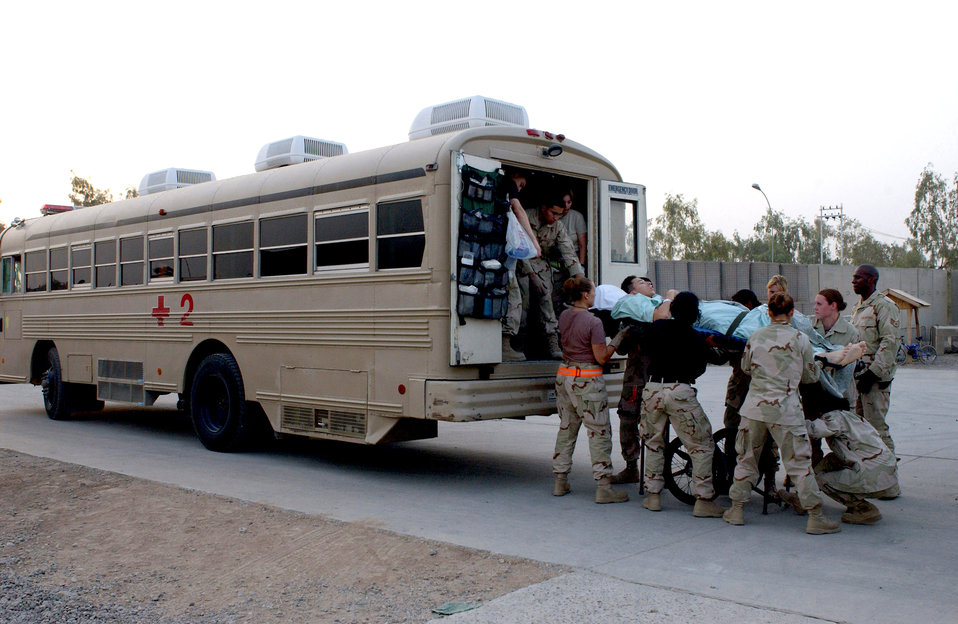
Balad's medics move into new facility

Volunteers and 332nd Expeditionary Medical Group Airmen load a Soldier into an ambulance bus at Balad Air Base, Iraq, Aug. 3. When wounded servicemembers and Iraqi military members and civilians are brought to the Air Force Theater Hospital, they are treated and then taken to the Contingency Aeromedical Staging Facility to await transportation to either a military or Iraqi hospital.